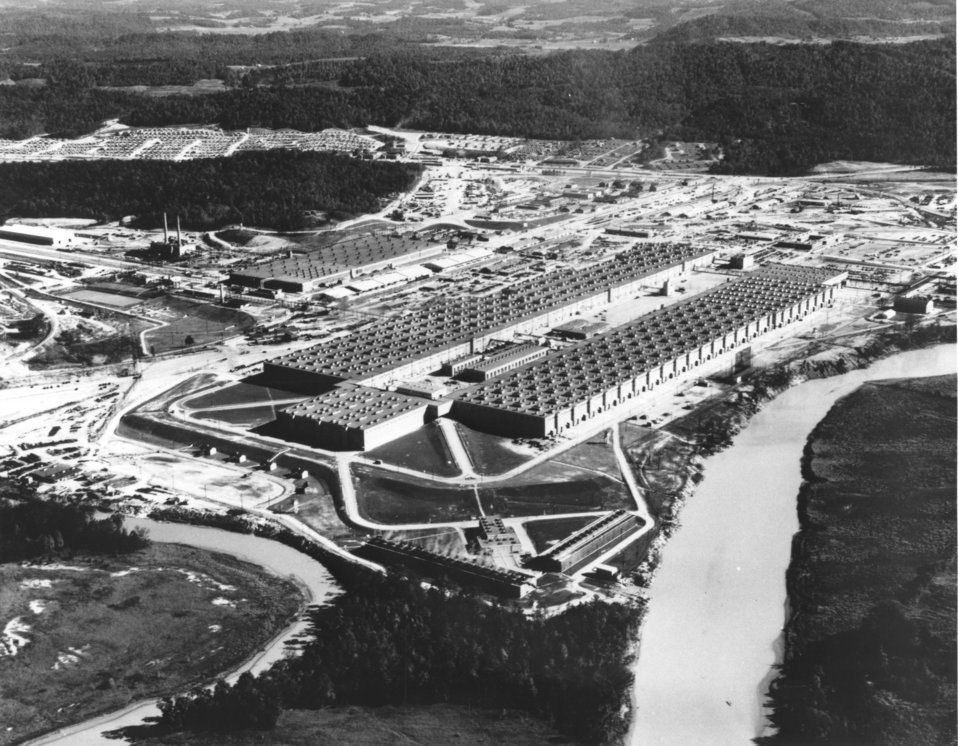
Aerial of Oak Ridge